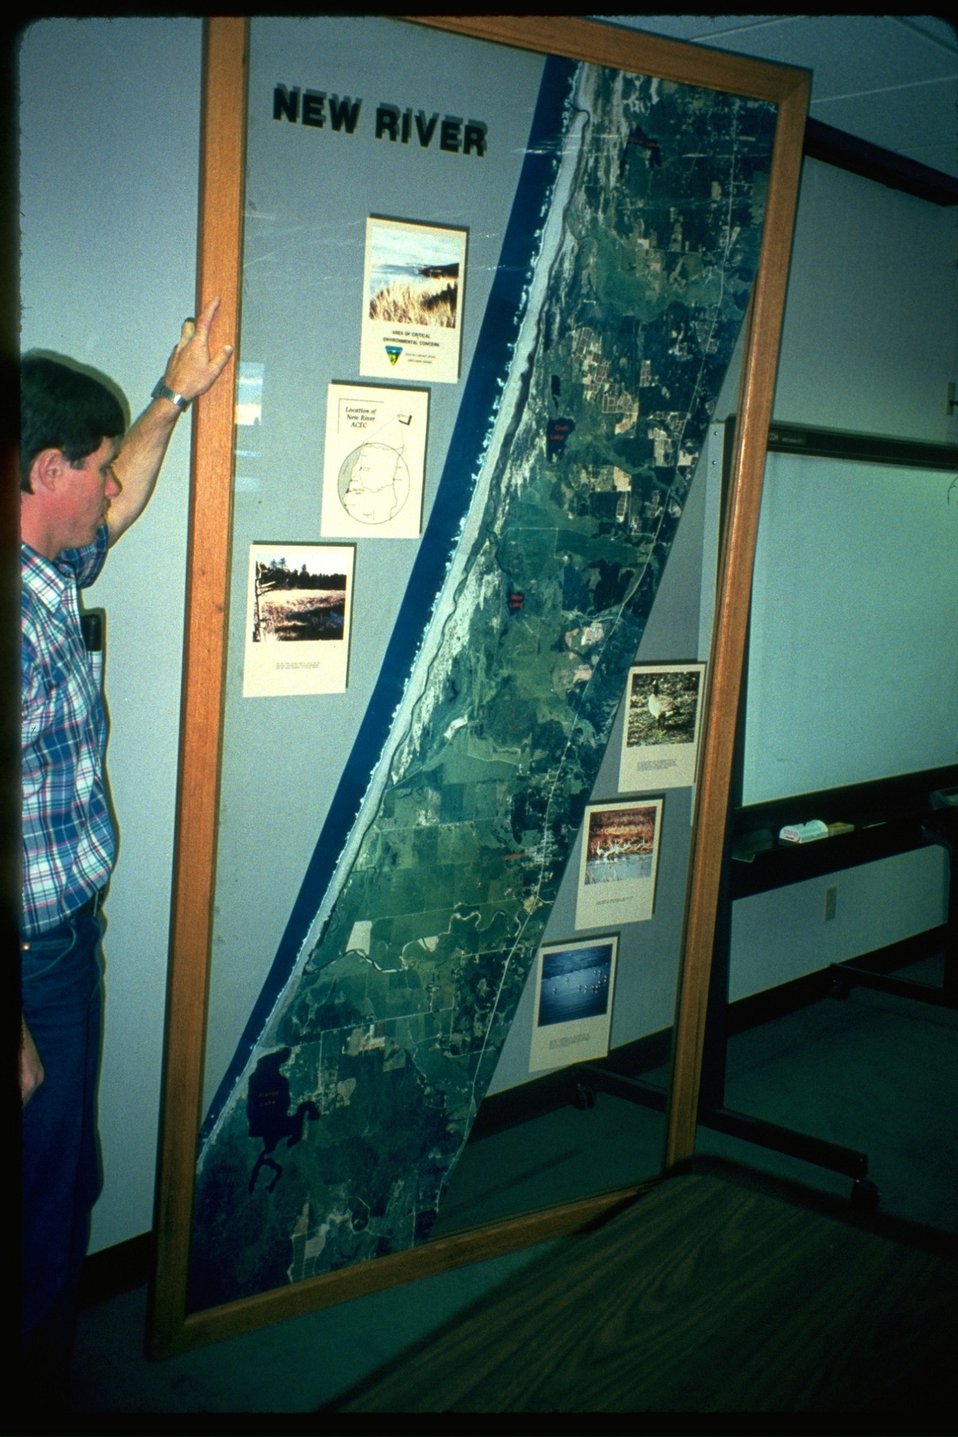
Display of Watchable Wildlife panels.